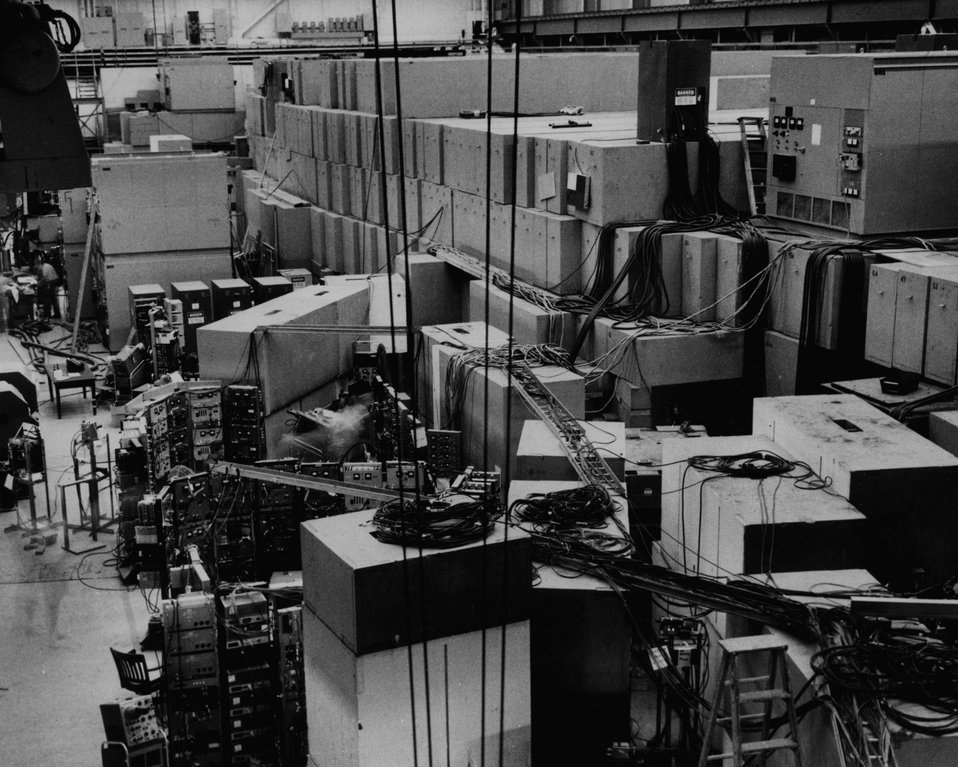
A view of the original experimental area at the Alternating Gradient Synchrotron showing the total cross section measurements experiment. One of the gaseous Cerenkov counters, surrounded by shielding, is partially visible in the lower right-hand corner. c. 1962